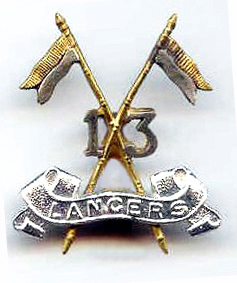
Badge of 13th Lancers.